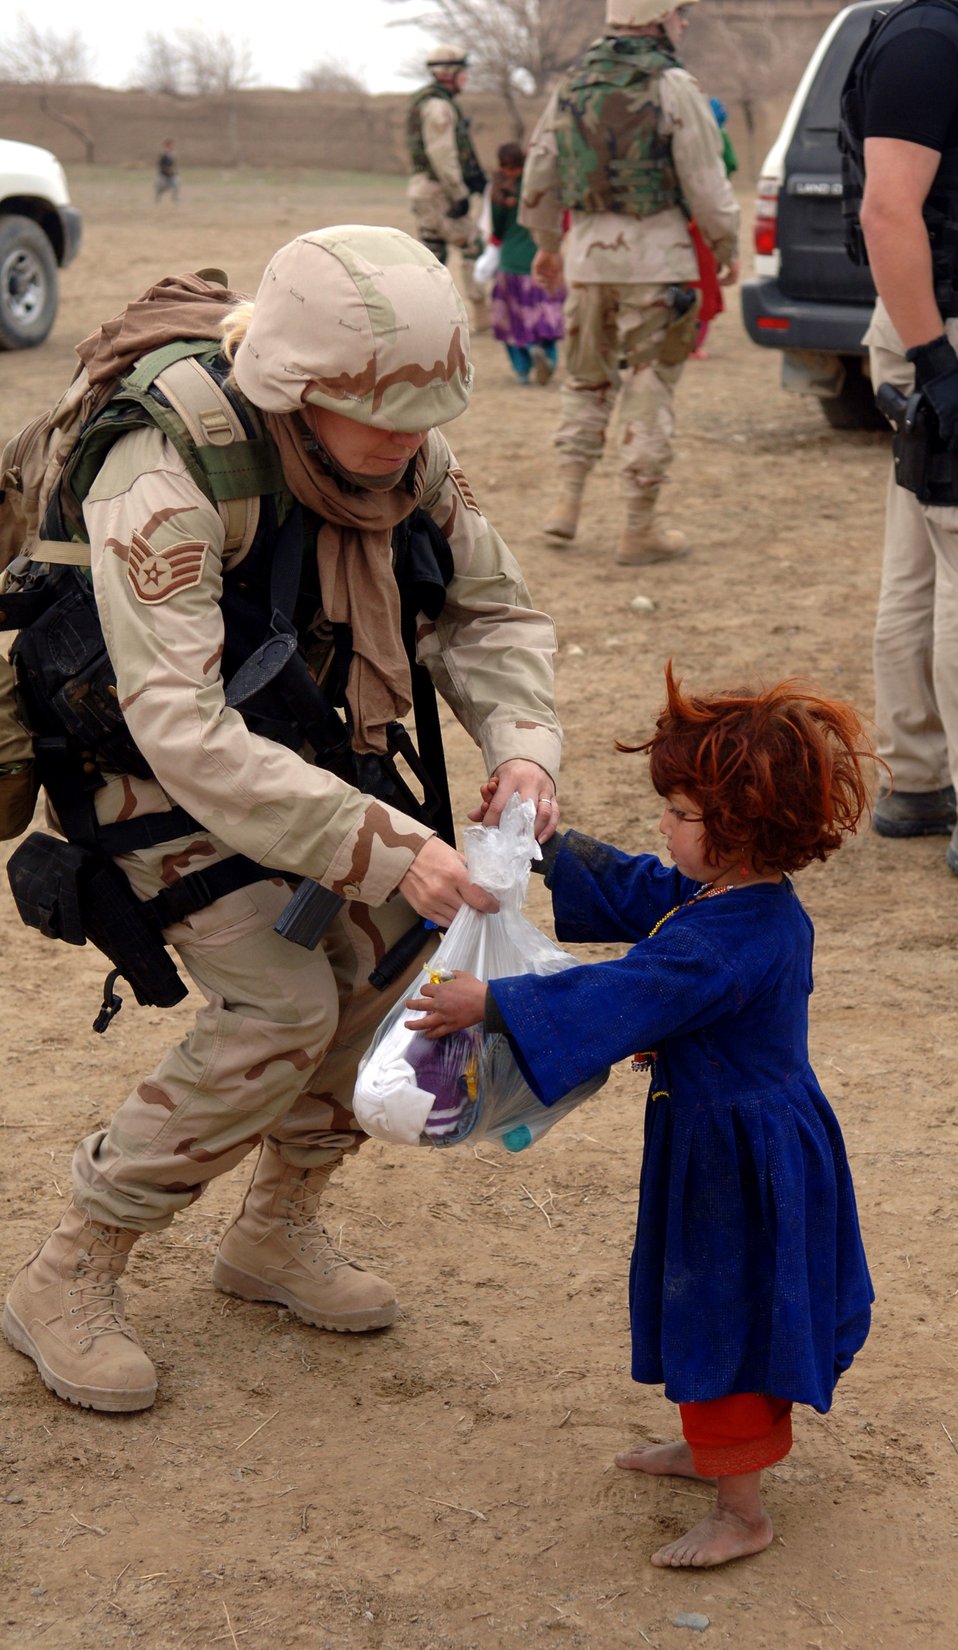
Airmen reach out

Staff Sgt. Karen Bishop hands clothes to a young girl from the village of Gadia, Afghanistan. Sergeant Bishop is a special tactics analyst assigned to the 455th Expeditionary Special Tactics Squadron at Bagram Air Base, Afghanistan. The Reservist is deployed from the 123rd Special Tactics Squadron at Standiford Field, Louisville, Ky.